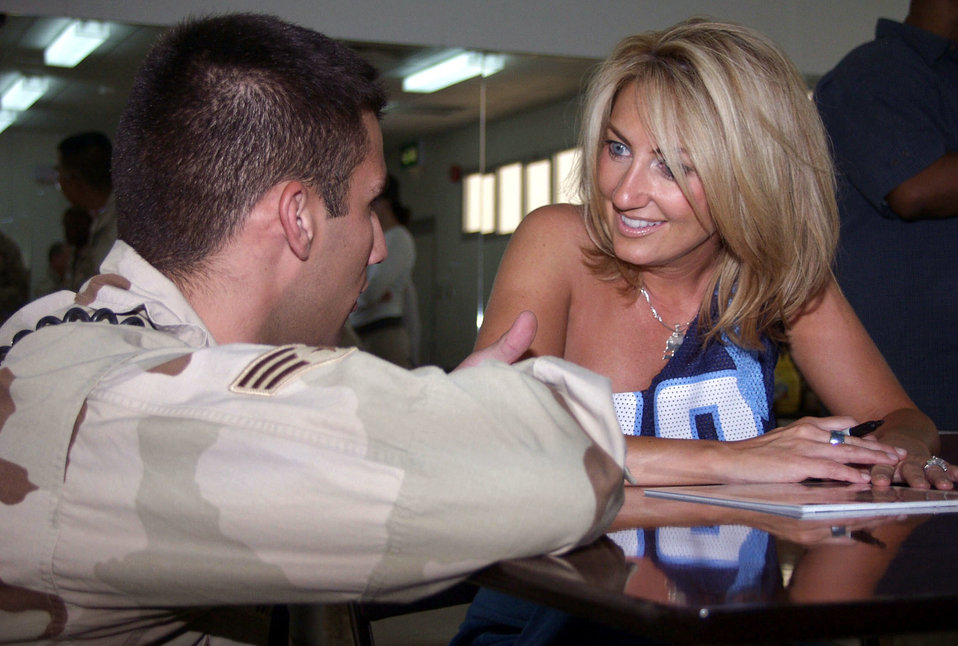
Gone country

OPERATION IRAQI FREEDOM (AFPN) -- Senior Airman Arturo Moreno asks country music star Lee Ann Womack for an autograph. Womack visited 386th Air Expeditionary Wing airmen June 19 as part of a United Service Organizations-sponsored tour of nearly a dozen Southwest Asia locations. Moreno is a firefighter assigned to the 386th Expeditionary Civil Engineer Squadron and is deployed from Spangdahlem Air Base, Germany.